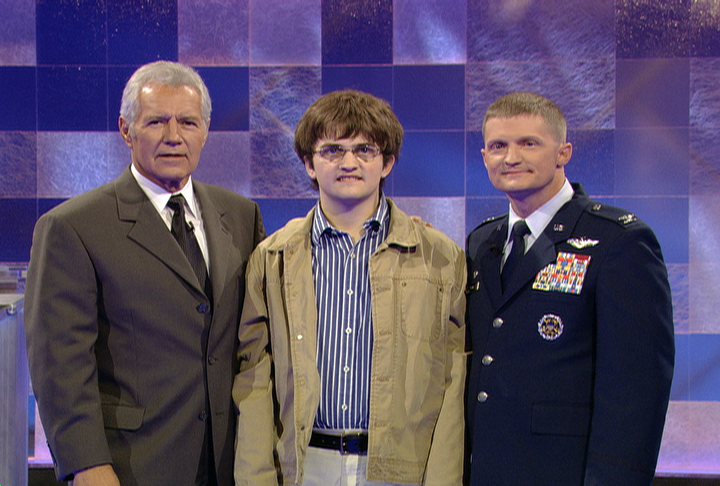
Nellis commander completes six-show run on 'Jeopardy!'

Col. Dave Belote (right) and his son, Drew (center) pose for a photo with Alex Trebek, the host of